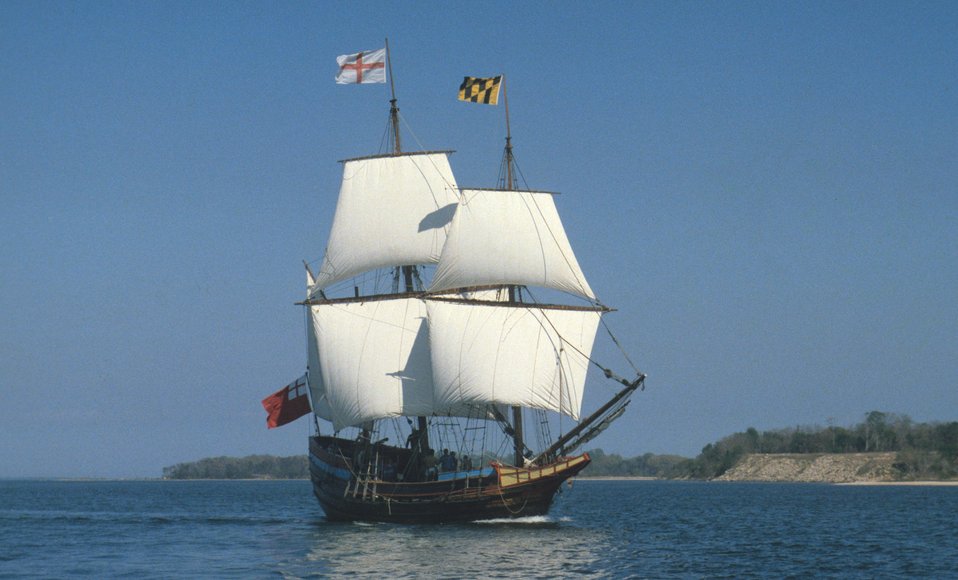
The tall ship Maryland Dove sailing in the Potomac River.